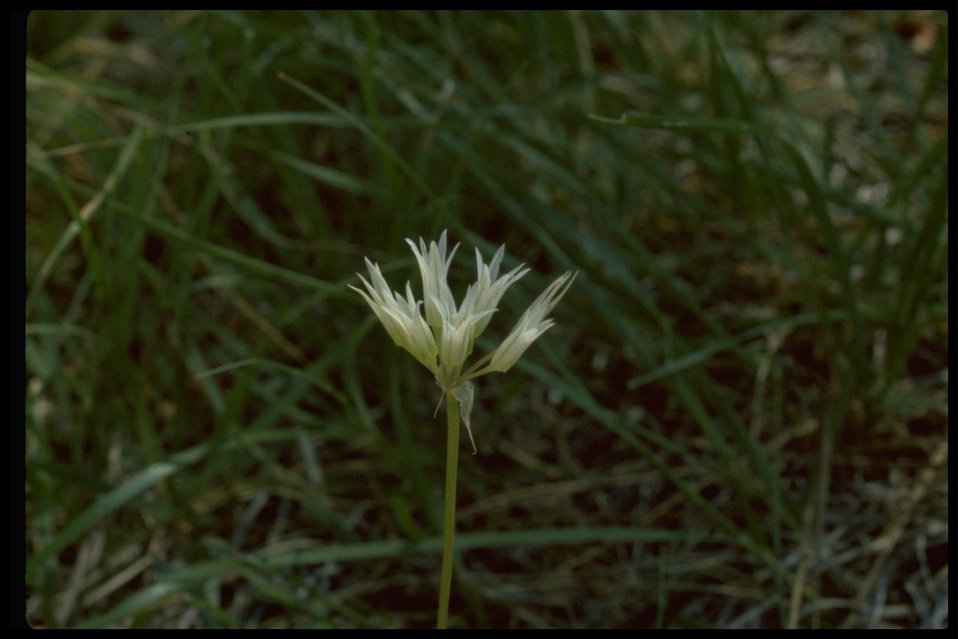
Medium shot of Bolander's onion (Allium bolanderi var. mirabile).